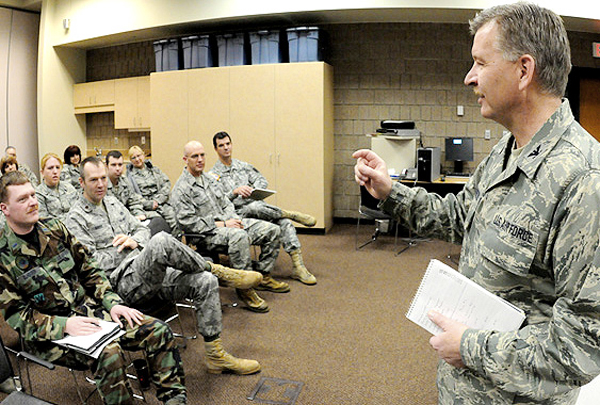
Guard mobilizes

Col. Ron Solberg, the 119th Support Group Commander, (right) addresses full-time North Dakota Air National Guard personnel Mar. 15, 2010, as he initiates personnel mobilization plans for the regional flood fight beginning in the Red River Valley, Fargo, N.D. The North Dakota National Guard plan calls for 300-400 personnel to be voluntarily placed on state active duty orders within 24-hours. The plans provide for all of the same flood fighting missions that the N.D. National Guard provided in the historic flood fight in the spring of 2009.